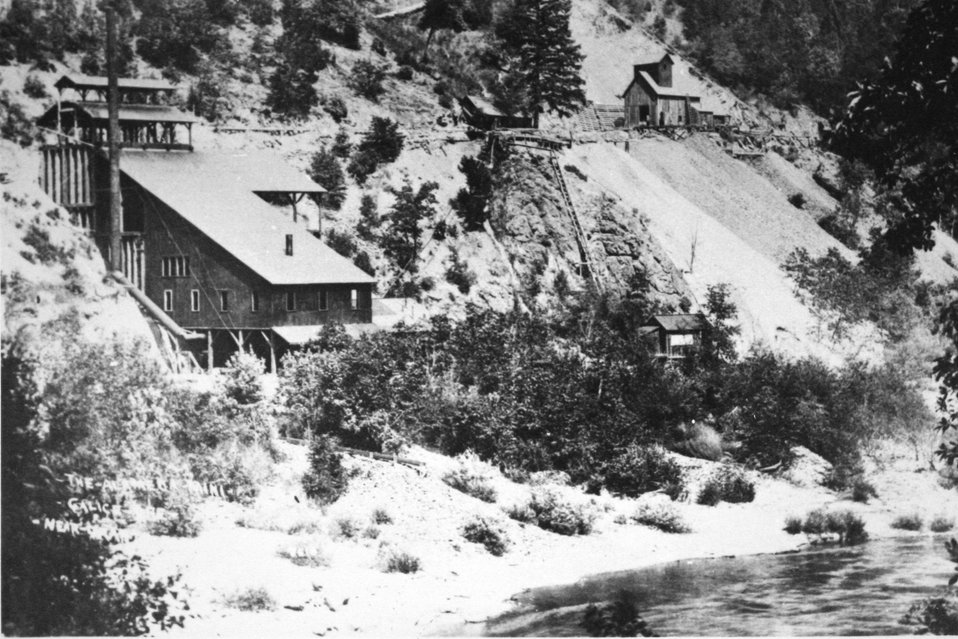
Almeda mine C. 1910 - 1911